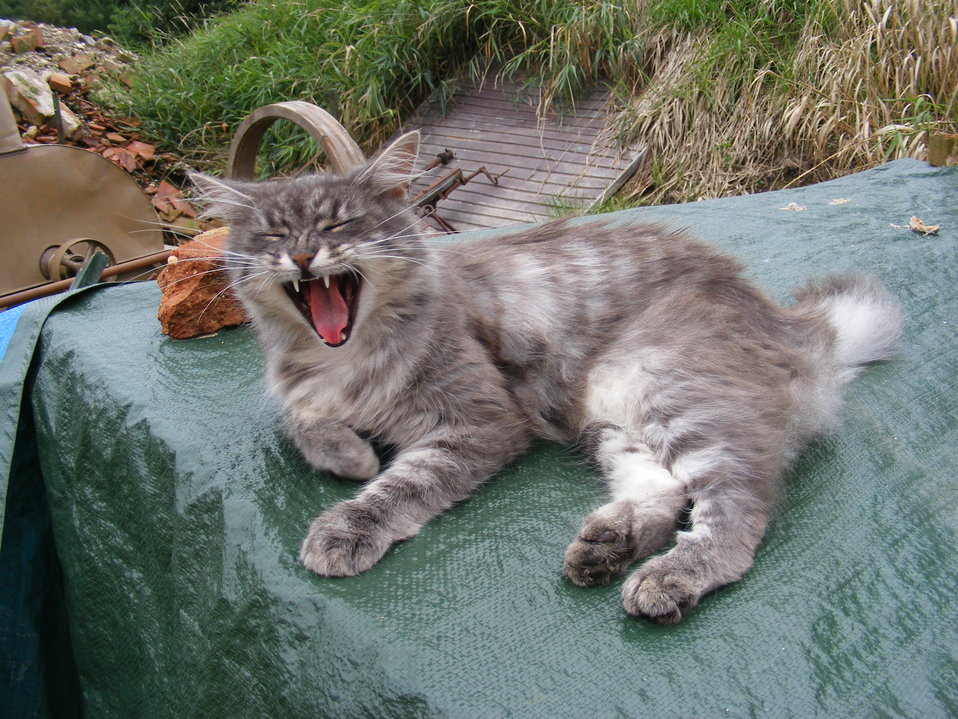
Yawning Norwegian Forest cat.